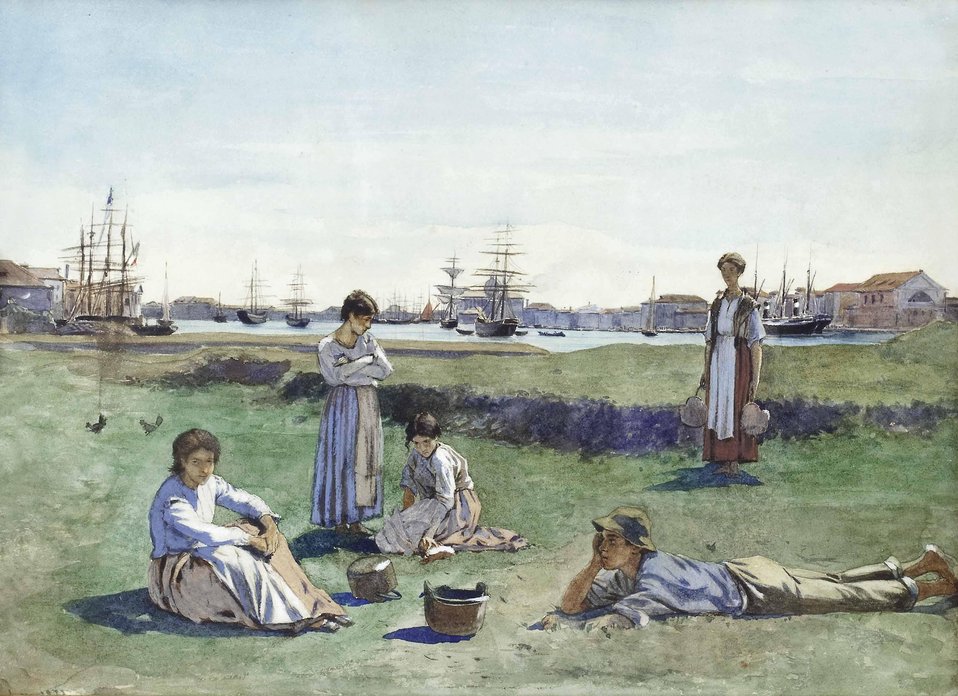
'Venezianische Kesselflicker' unten links signiert und datiert: F. L. Ruben 1872, Gouache auf Papier, ca. 25 x 35,5 cm